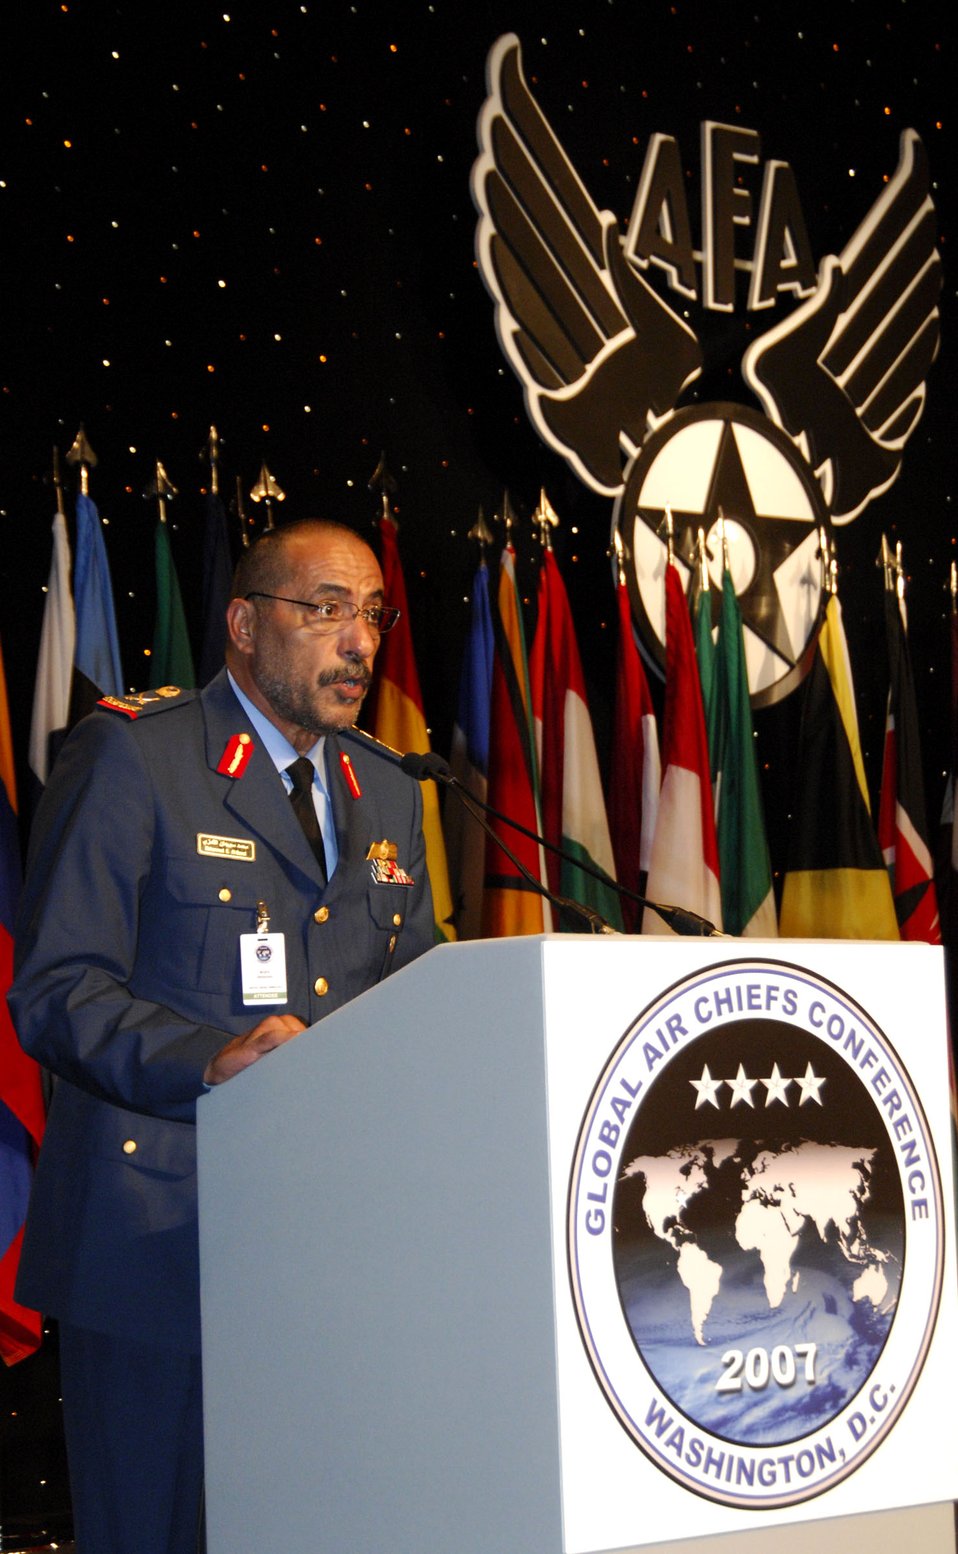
Global Air Chiefs Conference 2007

United Arab Emirates Maj. Gen. Staff Pilot Mohammad Al Qamzi addresses attendees during the Global Air Chiefs Forum Sept. 24, a session during the Global Air Chiefs Conference in Washington D.C. More than 90 air force chiefs of staff from around the globe attended the conference hosted by the U.S. Air Force.